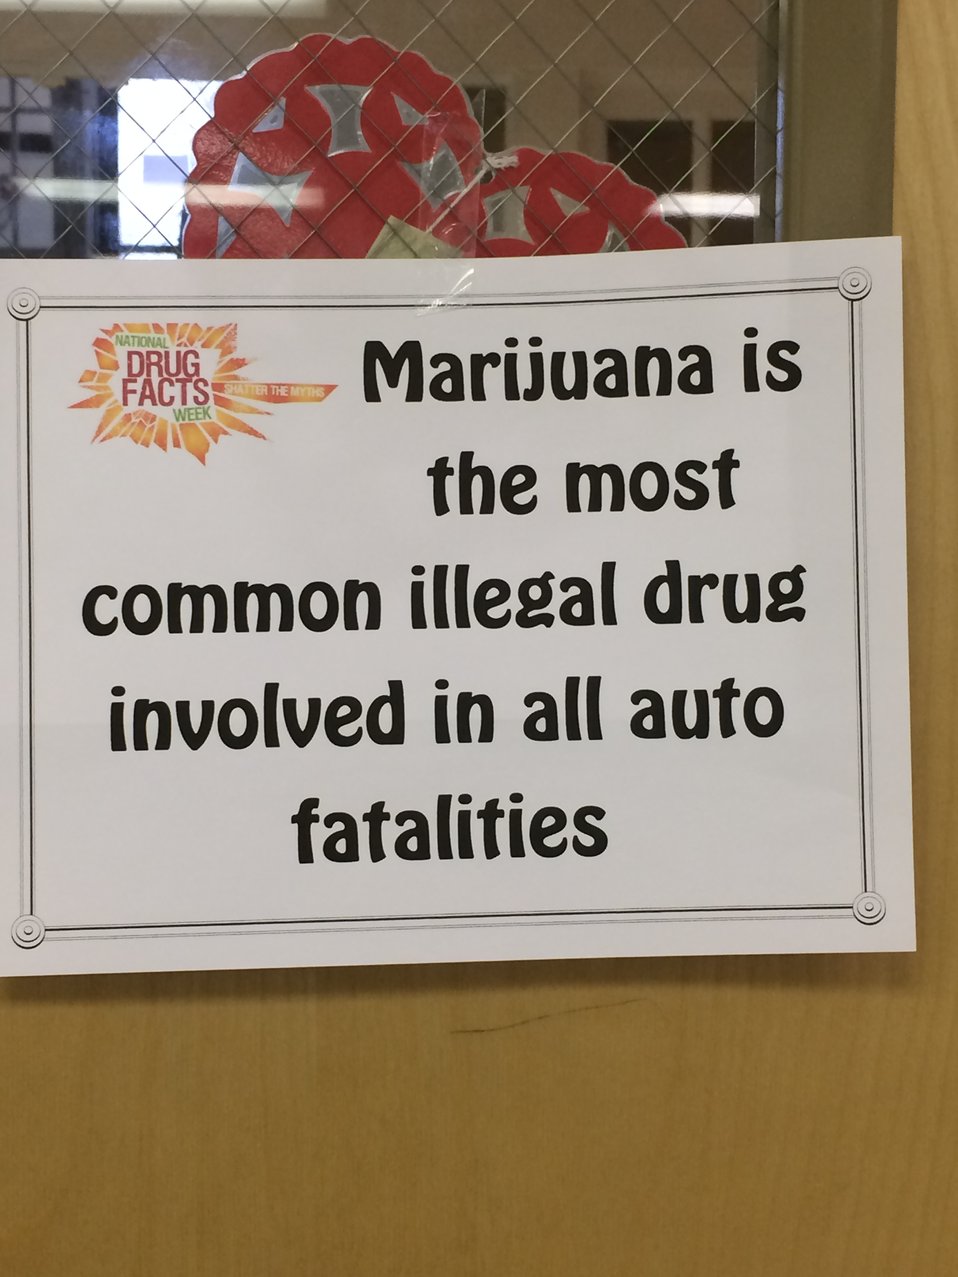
Just the Facts

Teenagers from the Van Buren County SAFE Coalition's, Youth Leadership Council (YLC) in Keosauqua, Iowa participate in various events during National Drug Facts Week, 2014.